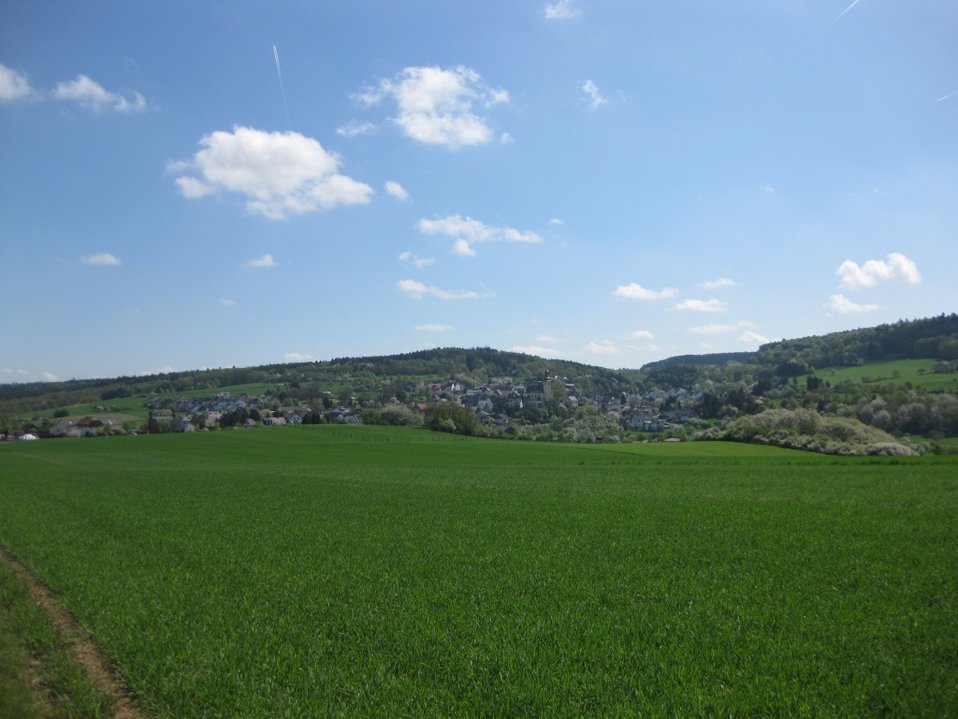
Deutsch: Ortsansicht Haintchen im Taunus